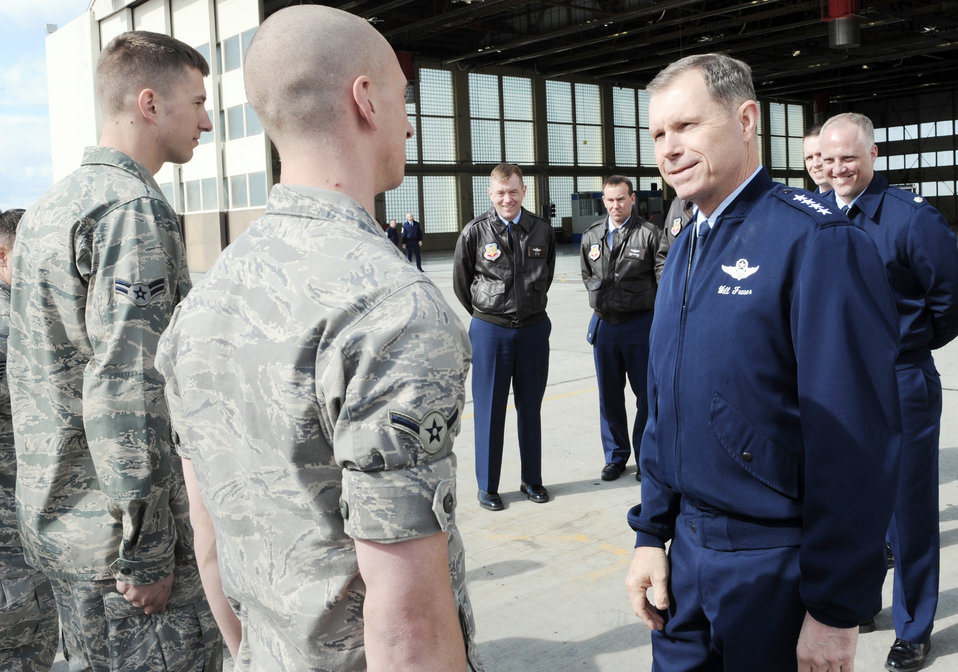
Air Combat Command leader visits Mountain Home Airmen

Gen. William M. Fraser III meets Airmen on the flightline during a tour March 8, 2010, at Mountain Home Air Force Base, Idaho. General Fraser is the commander of Air Combat Command.